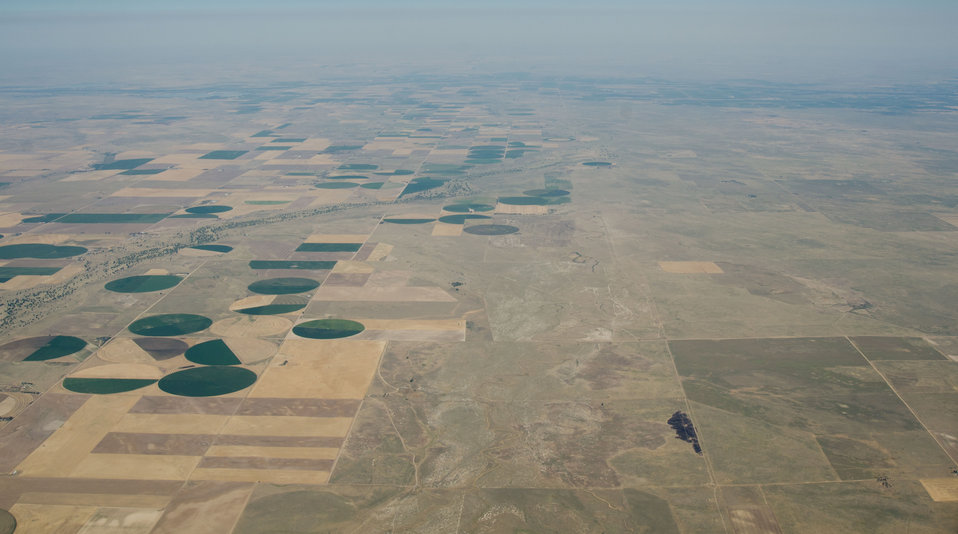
Aerial views of drought affected Colorado farm lands, near Wiggins, Colorado on Saturday, July 21, 2012. Green areas are irrigated, the yellow areas are dryland wheat crops.